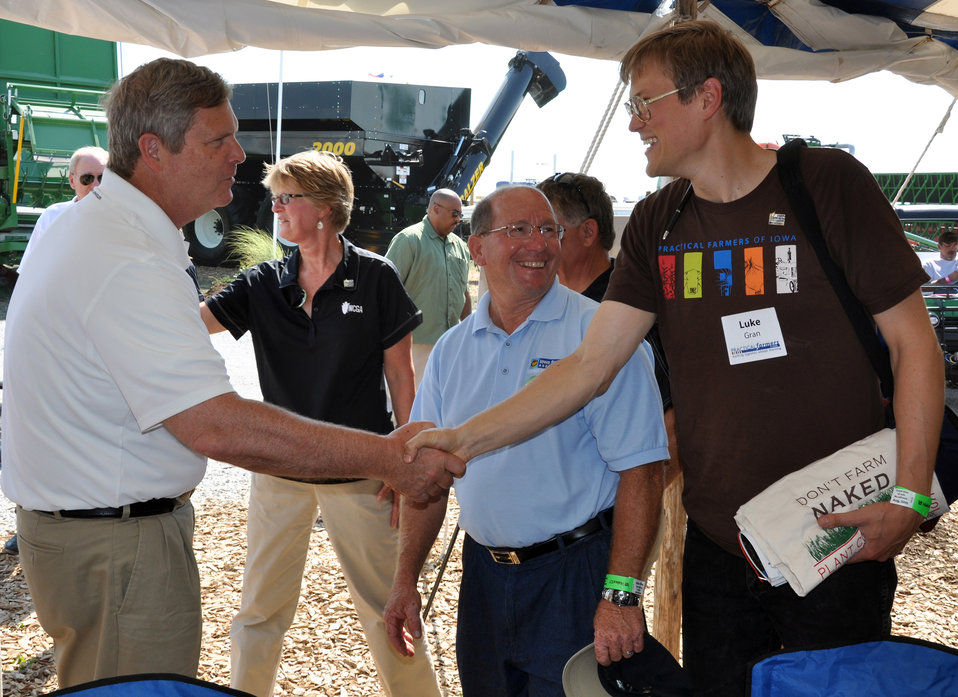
Agriculture Secretary Tom Vilsack visits with Luke Gran, Next Generation Coordinator for Practical Farmers of Iowa, during the 2012 Farm Progress Show in Boone, Iowa, on Aug. 30, 2012.